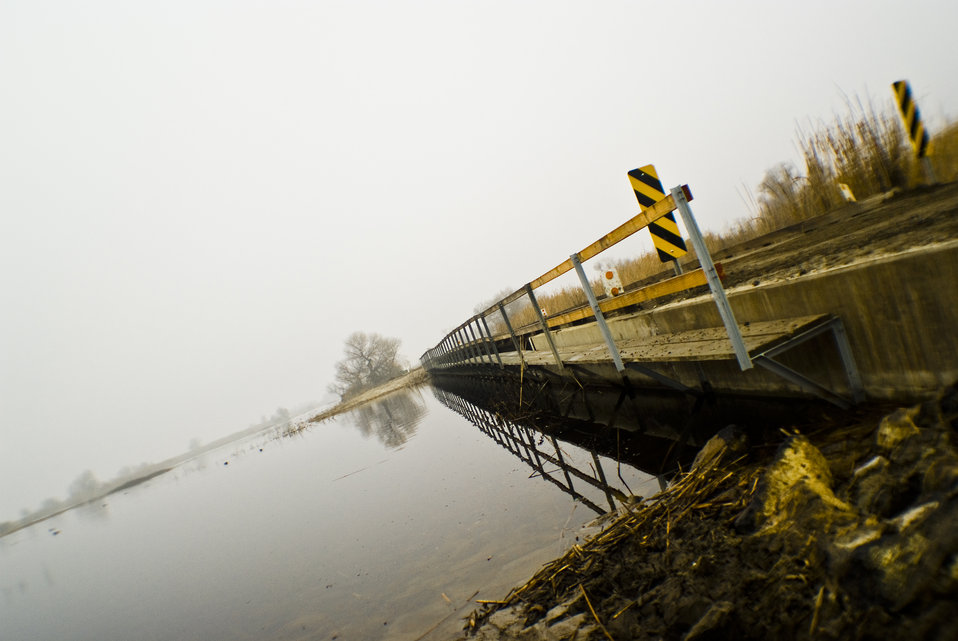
Kern National Wildlife Refuge water control structure rehabilitation

Kern National Wildlife Refuge rehabilitation of a water control structure. This project was funded by the American Recovery and Reinvestment Act of 2009.

Kern National Wildlife Refuge is the centerpiece of the Kern National Wildlife Refuge Complex. It is located 19 miles west of the city of Delano at the southern end of the San Joaquin Valley of California. Kern National Wildlife Refuge was established in 1960 and consists of 11,249-acres of natural desert uplands, a relict riparian corridor, and developed marsh. Kern Refuge provides optimum wintering habitat for migratory birds with an emphasis on waterfowl and water birds. Through restoration and maintenance of native habitat diversity, the refuge also provides suitable habitat for several endangered species as well as preserving a remnant example of the historic valley uplands in the San Joaquin Desert. A year round 6.5-mile auto route leads through the some of the wetlands